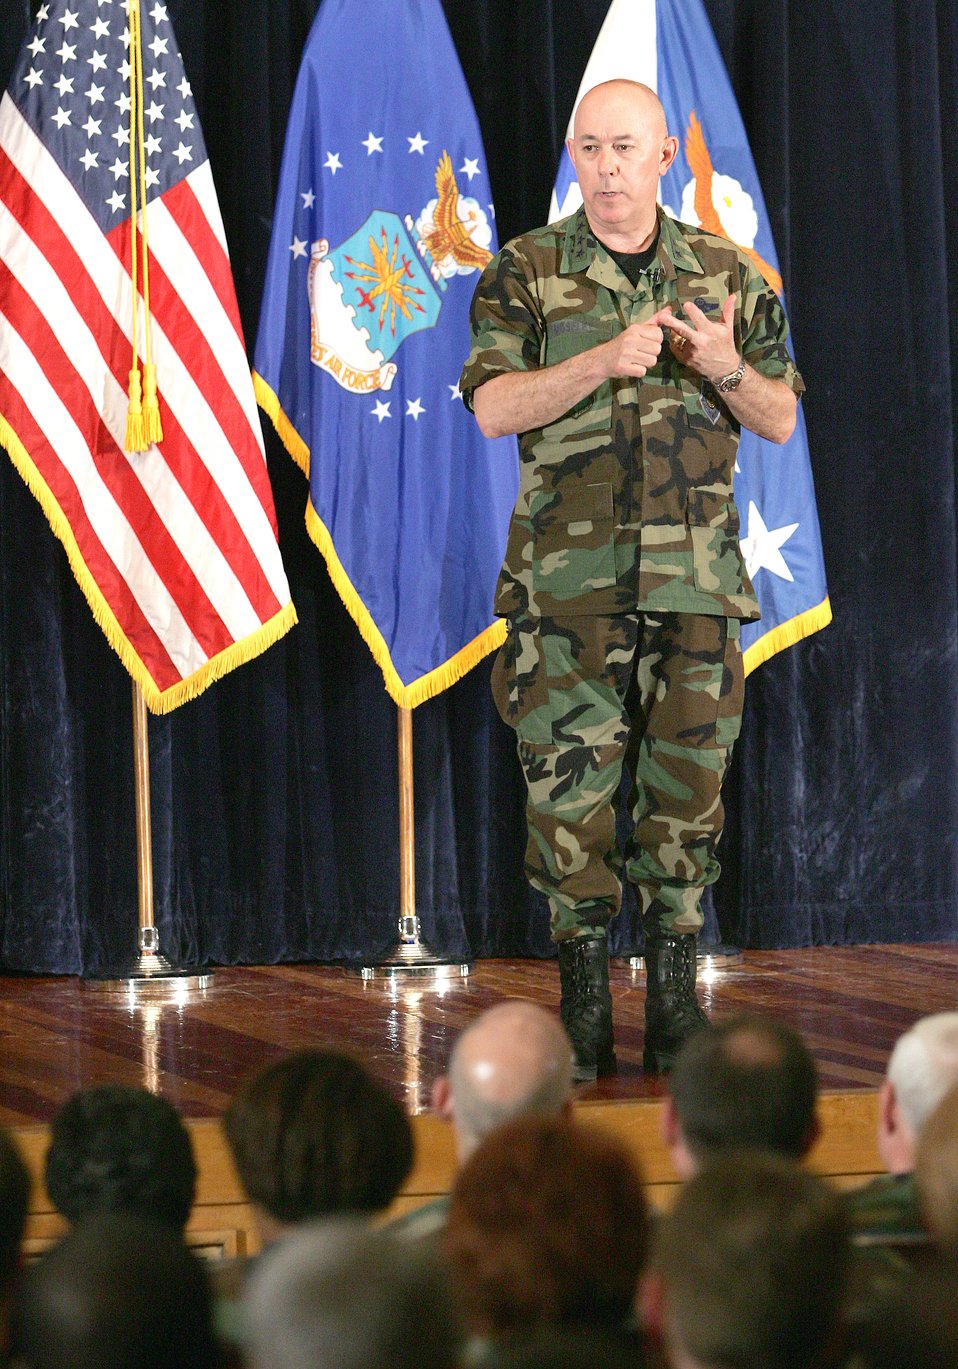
Chief of staff visits Lackland

Gen. T. Michael Moseley, Air Force chief of staff, conducts an officers call at Wilford Hall Medical Center at Lackland Air Force Base, Texas, on Thursday, April 27, 2006.